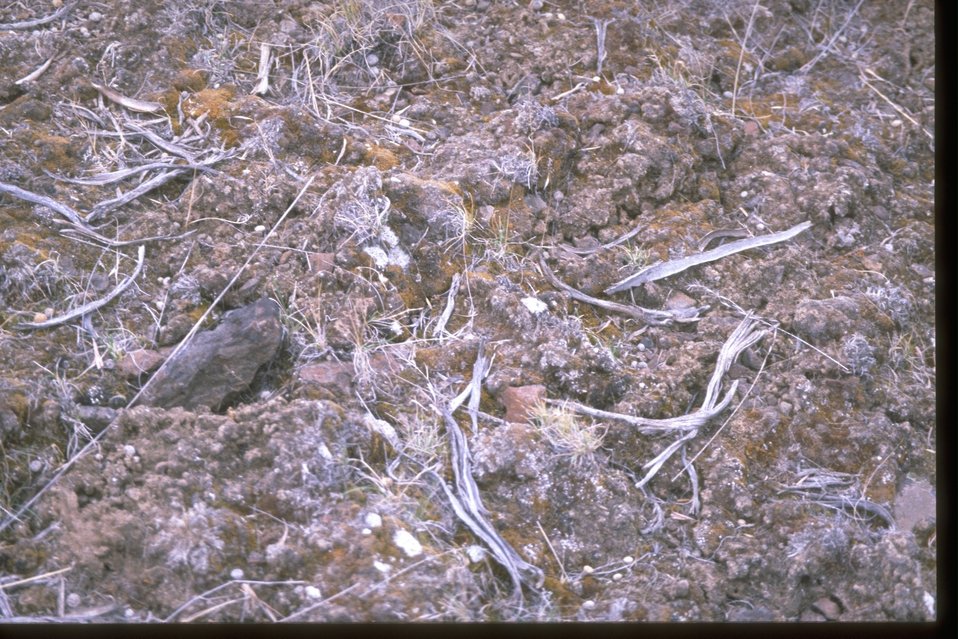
Cryptogammic crust (microbiotic lichens, mosses, and etc.)